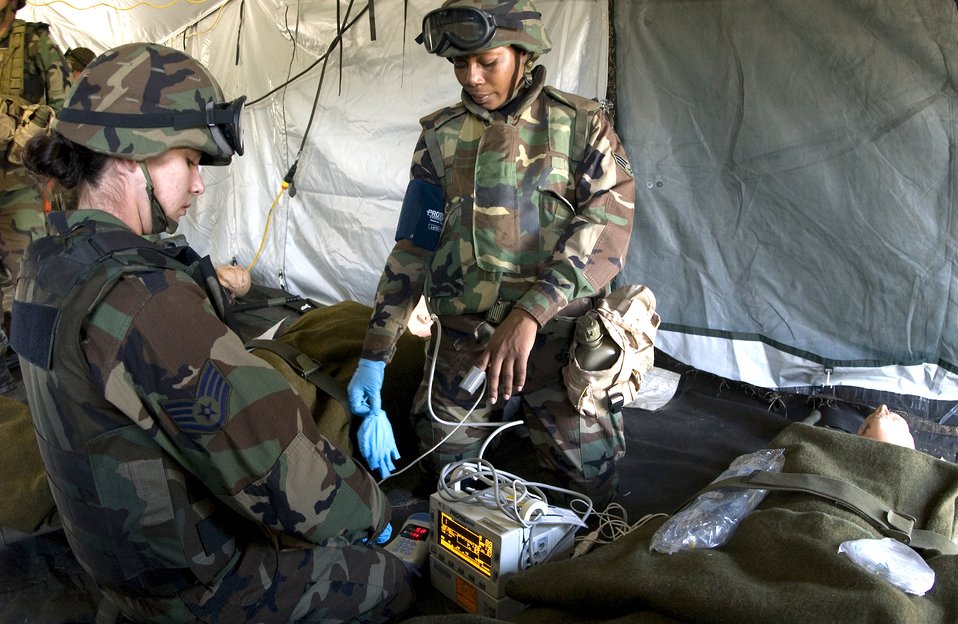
Airmen train for air evac

Medics with the 43rd Air Evacuation Squadron at Pope Air Force Base, N.C., prepare a patient for loading onto an arriving C-130 Hercules on Thursday, April 6, 2006. The 43rd is conducting annual medical field training to prepare squadron members for real world deployments.